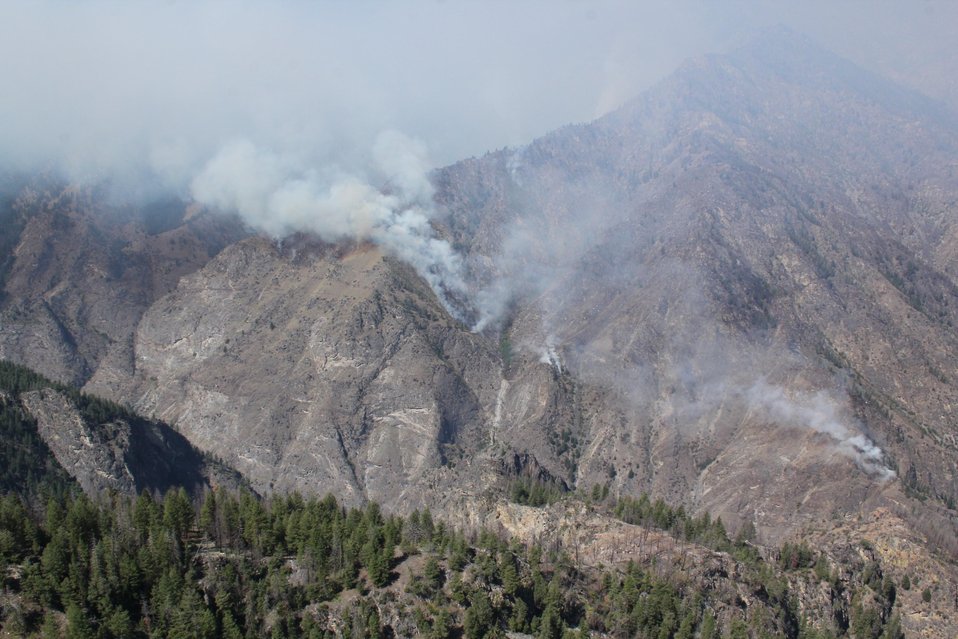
The Papoose Fire in the Salmon-Challis National Forest in Idaho began on Jul. 8, 2013 by lightning has consumed approximately 6, 504 acres.